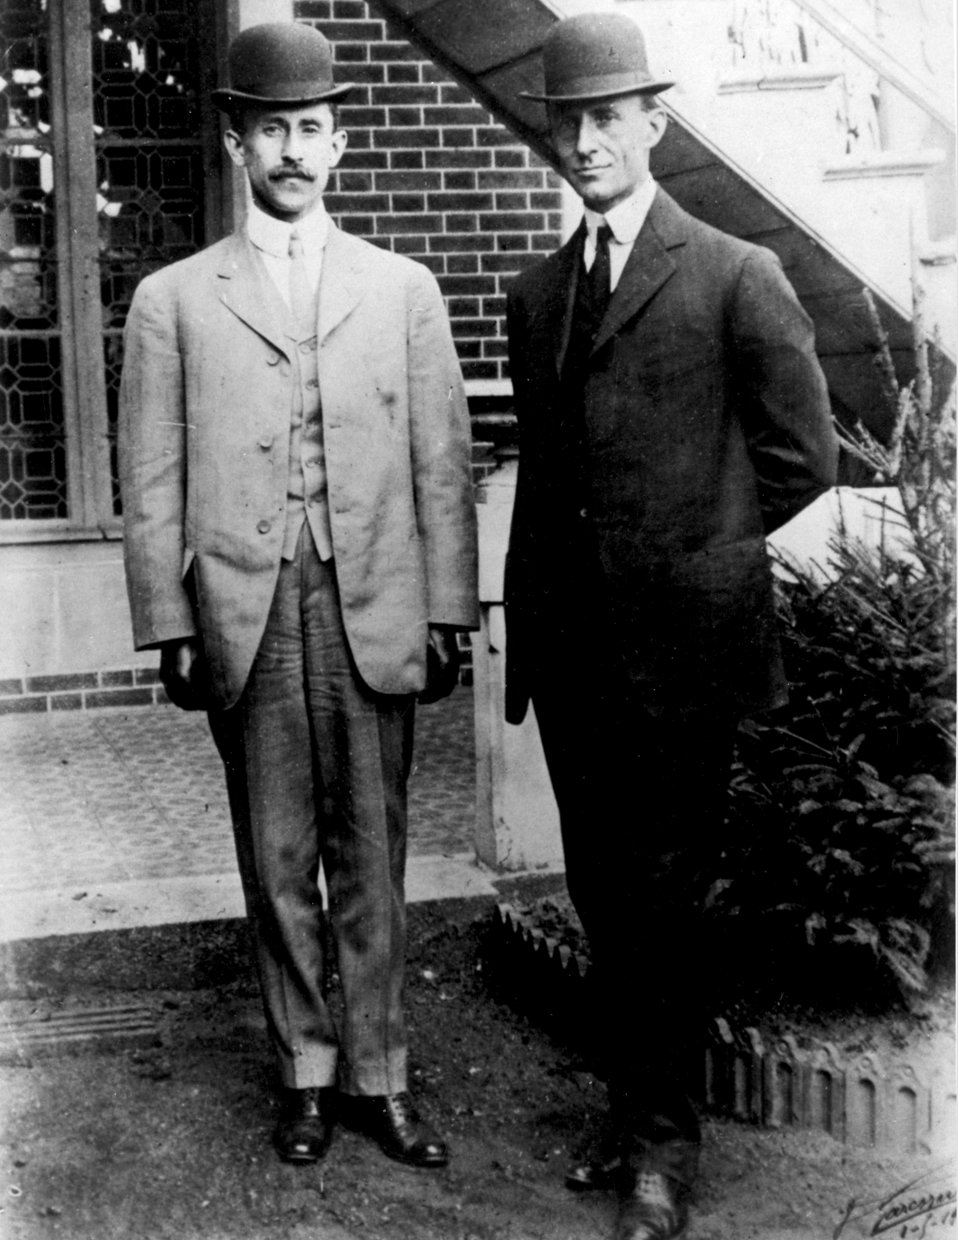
Orville and Wilbur Wright

EARLY YEARS -- Orville and Wilbur Wright pose for the camera, 1909.